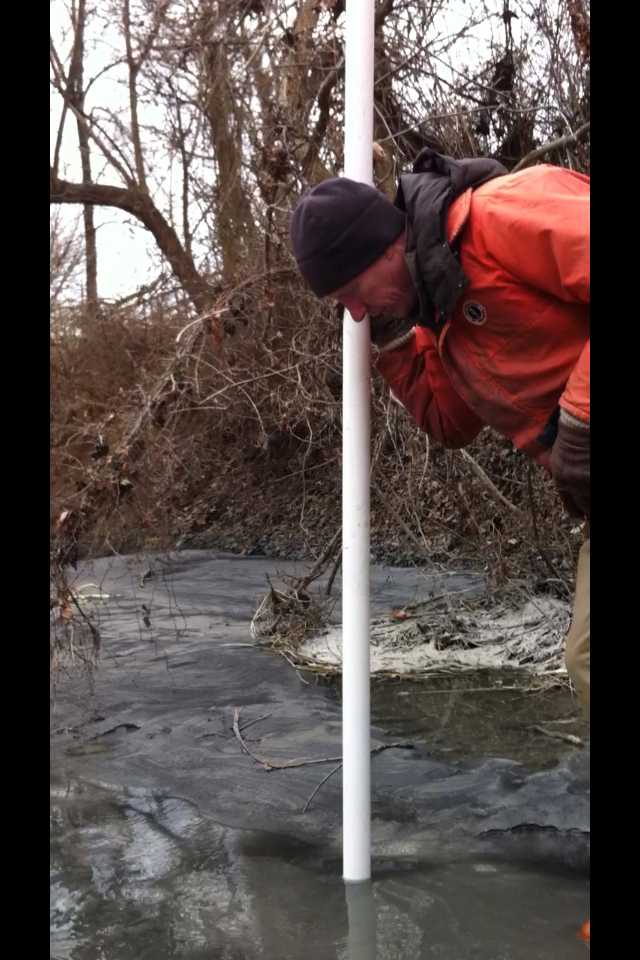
USFWS responds to Dan River coal ash spill.

Tom Augspurger, USFWS, taking core sample during February 8th reconnaissance of Dan River coal ash spill.